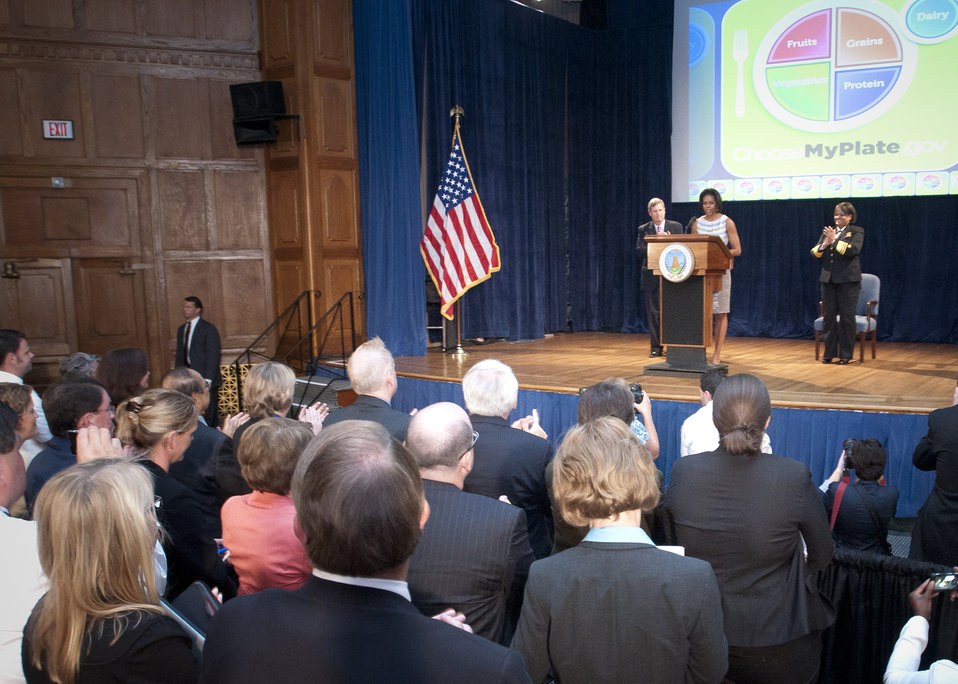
First Lady Michelle Obama talks about the new Food Icon MyPlate (L to R seated Agriculture Secretary Tom Vilsack and Surgeon General Regina Benjamin) on Thursday, Jun. 2, 2011in the Jefferson Auditorium, U. S. Department of Agriculture (USDA). This new icon will replace the USDA’s MyPyramid image as the government’s primary food group symbol. MyPlate is an easy-to-understand visual cue to help consumers adopt healthy eating habits that are consistent with the 2010 Dietary Guidelines for Americans. MyPyramid will remain available to interested health professionals and nutrition educators in a special section of the new website.